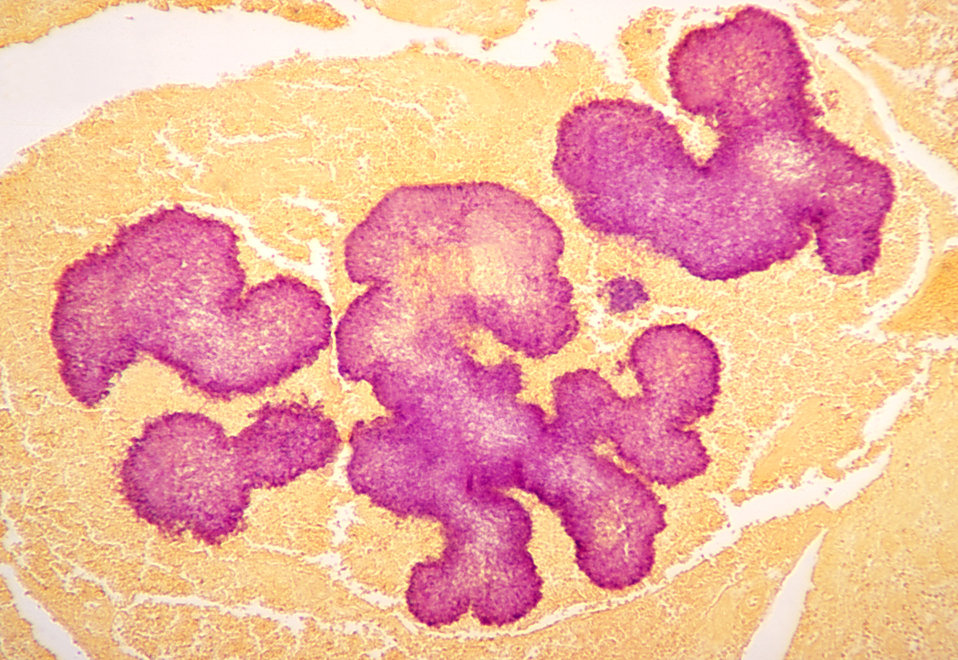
Note the histopathologic appearance of 'black grain mycetoma' due to Madurella mycetomatis using a Gridley stain.